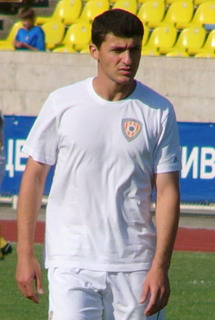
Русский: Роберт Зебелян 2009